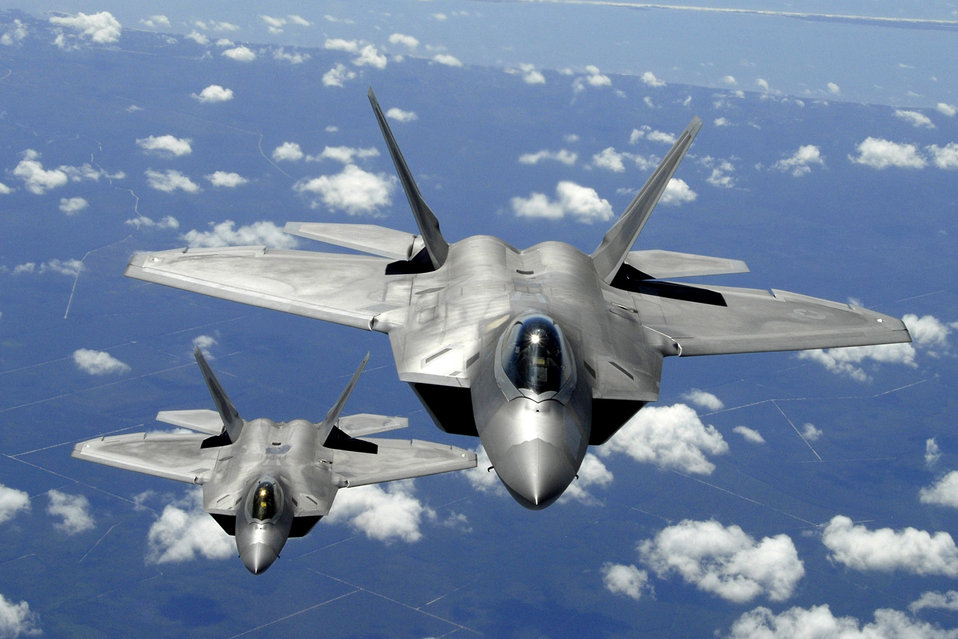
New concept gets latest technologies reach warfighters quickly

Two F-22 Raptors from Tyndall Air Force Base, Fla., fly in formation. Its combination of stealth, supercruise, maneuverability, and integrated avionics, coupled with improved supportability, represents an exponential leap in warfighting capabilities. The F-22 performs both air-to-air and air-to-ground missions allowing full realization of operational concepts vital to the 21st century Air Force.